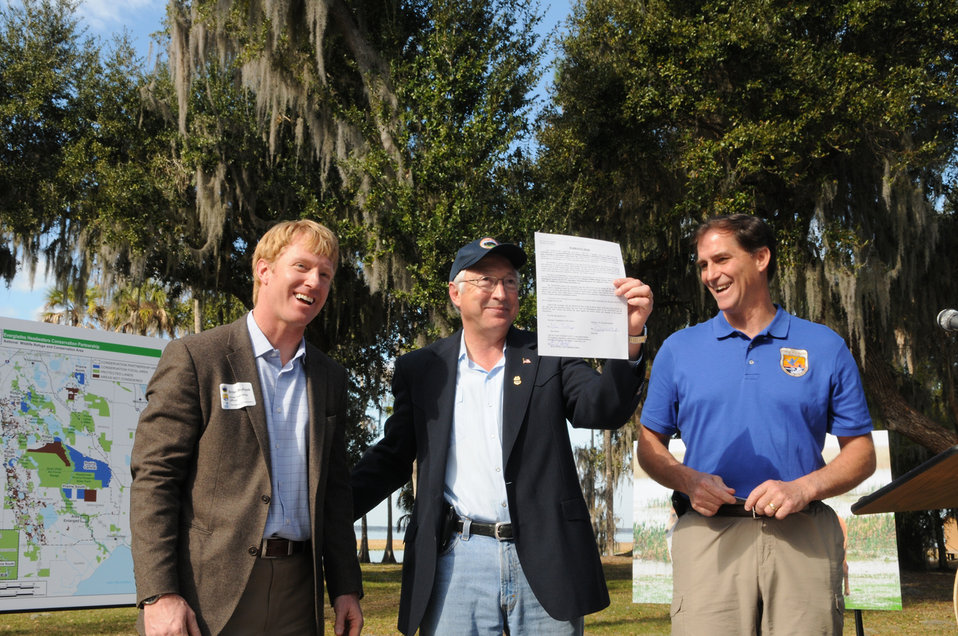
Event Announcing Everglades Headwaters NWR